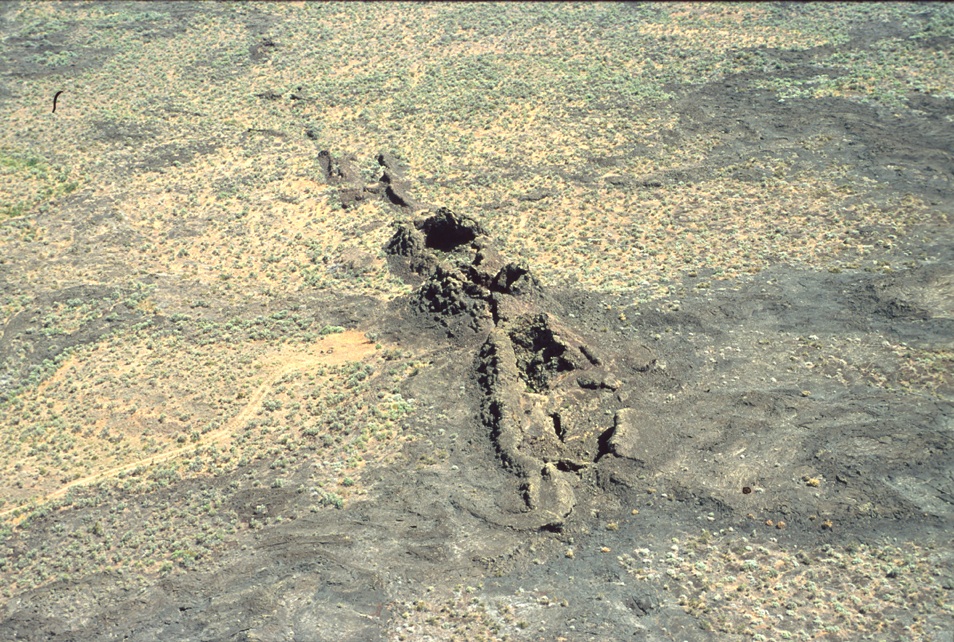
Shoshone Field Office USRD Upper Snake River District